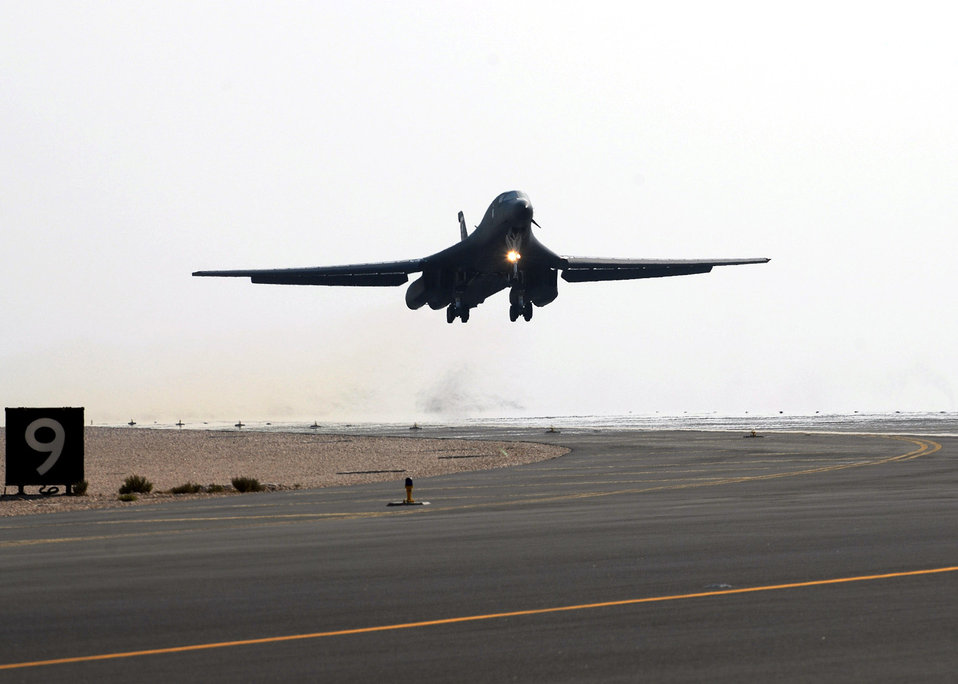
A B-1B launches

A mission-bound B-1B Lancer lifts off from the runway of an air base in Southwest Asia Dec.29. The B-1B is a multi-role, long-range bomber capable of flying intercontinental missions without refueling. It can perform a variety of missions, including that of carrying conventional weapons for theater operations.